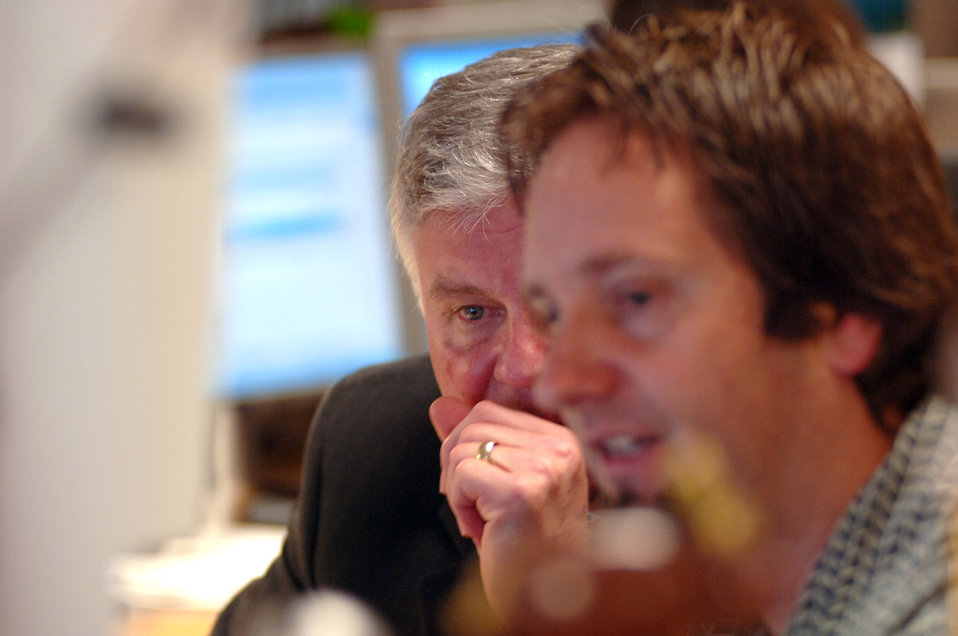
Personnel Services Delivery System initiative begins

Roger Blanchard, deputy A1, takes a customer call alongside Tim Moore, contact center agent, to discuss the use of the new Personnel Service Delivery System at Randolph Air Force Base, Texas, Friday, March 31, 2006.